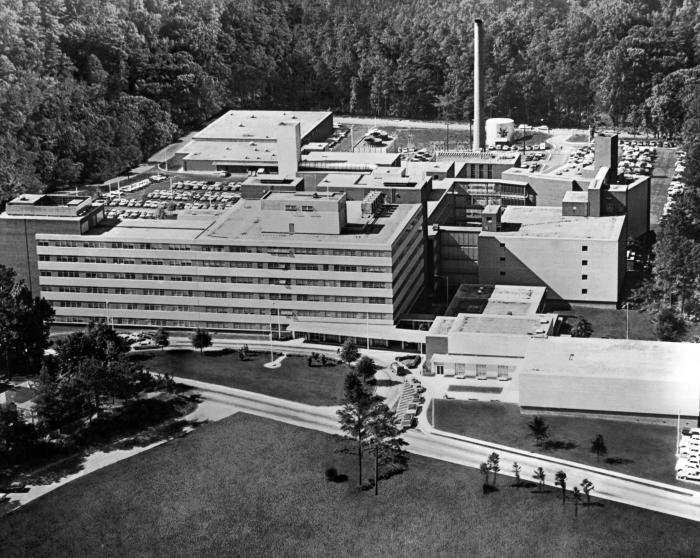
This 1966 aerial photograph captured the appearance of the Centers for Disease Control's headquarters located on the Roybal campus, 1600 Clifton Road in Atlanta, Georgia as it looked at that time.